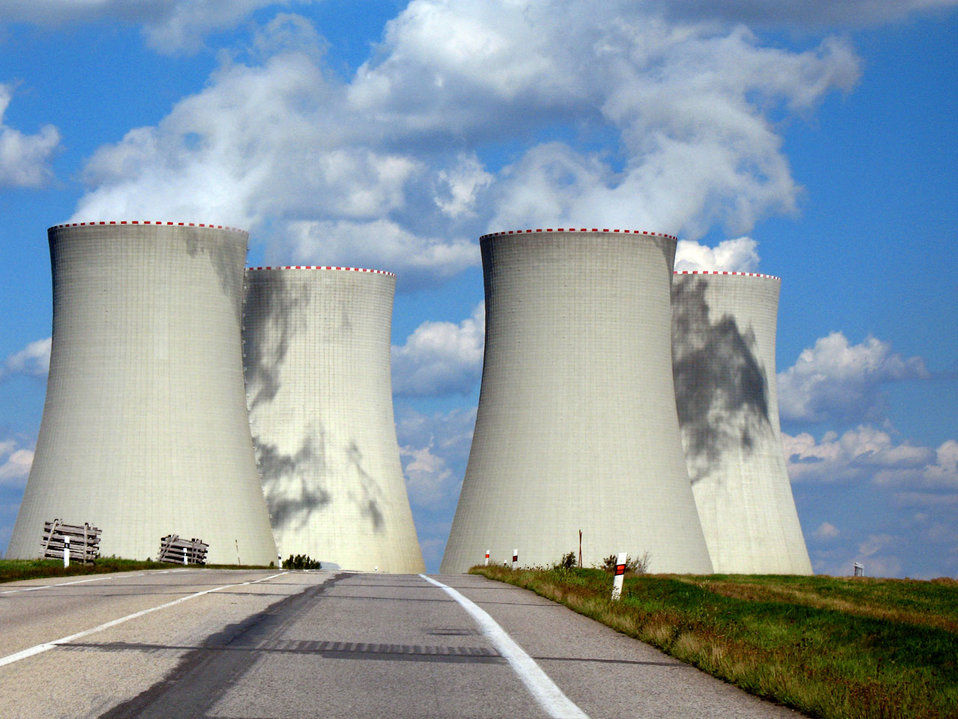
Cooling towers of a nuclear power station.